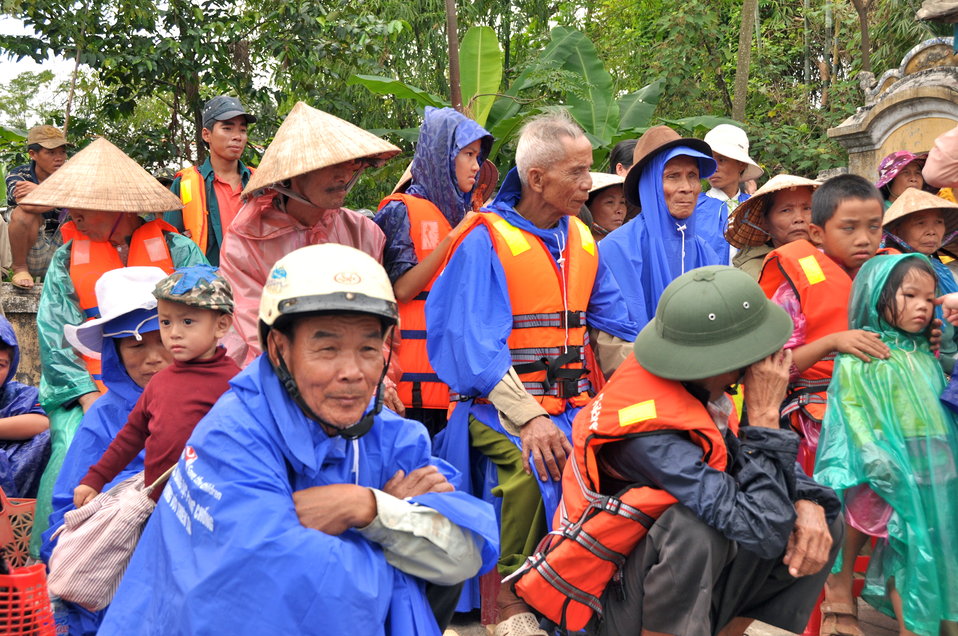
USAID and Save the Children support community evacuation drill and emergency preparedness in central Vietnam

Loc An Commune, Phu Loc District, Thua Thien Hue Province
December 4, 2012, Photo: Richard Nyberg, @USAIDVietnam